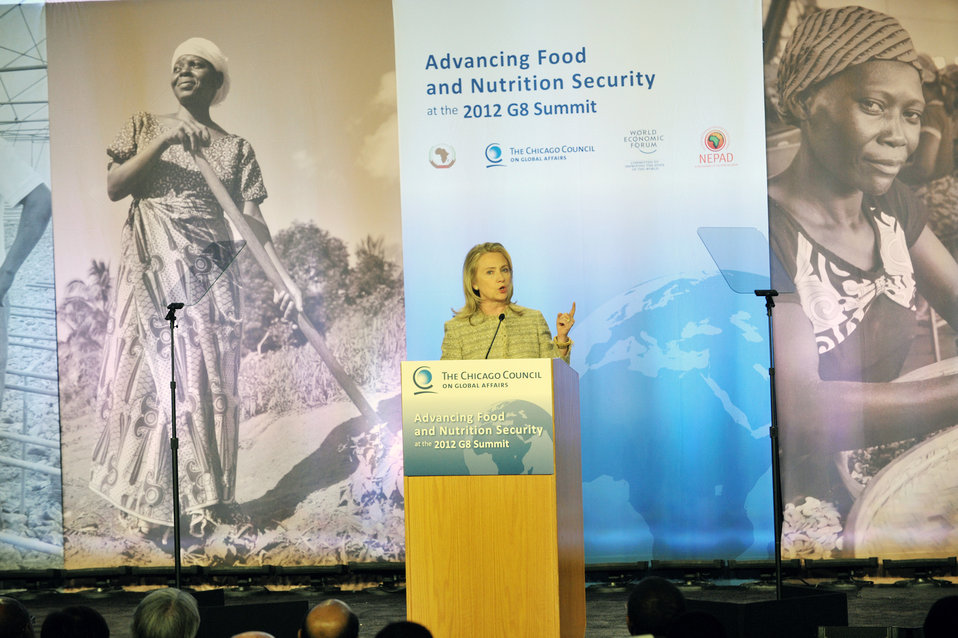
Secretary Clinton Delivers Remarks on Global Food Security

U.S. Secretary of State Hillary Rodham Clinton delivers remarks on Global Food Security at the Ronald Reagan Center in Washington, D.C. on May 18, 2012.